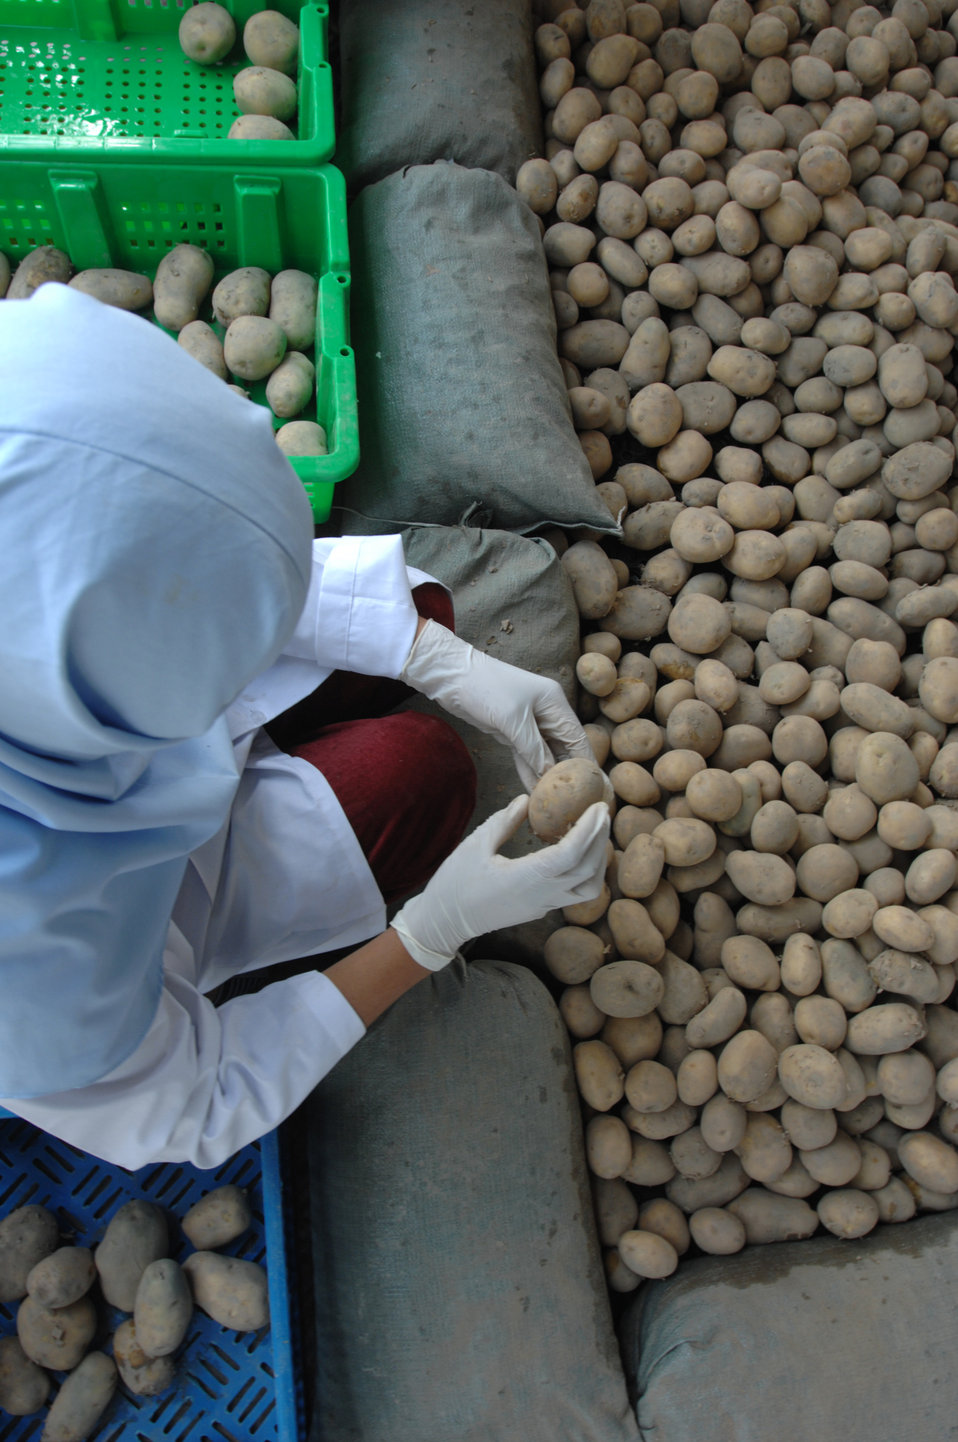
110209sv Shah166

Women sort and grade potatoes at the Surkh Rod vegetable packing facility in Nangarhar province on Wednesday, February 9, 2011. (S.K. Vemmer/Department of State)